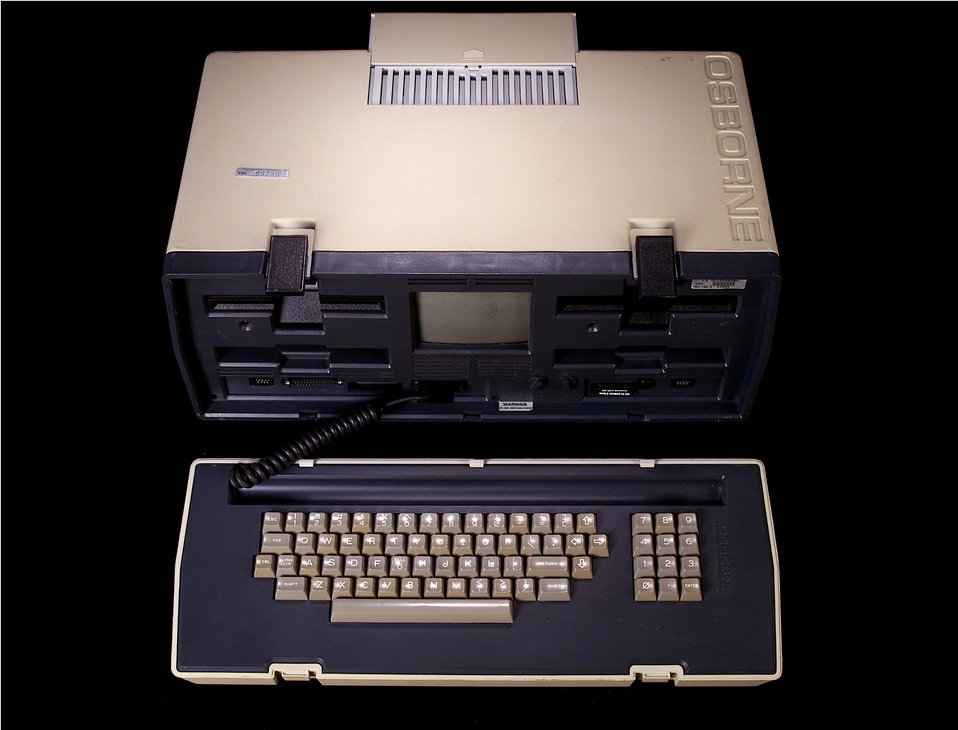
This is the Osborne 1, a 'laptop' computer first used at the CDC in 1981 and was considered the 'first true portable computer'